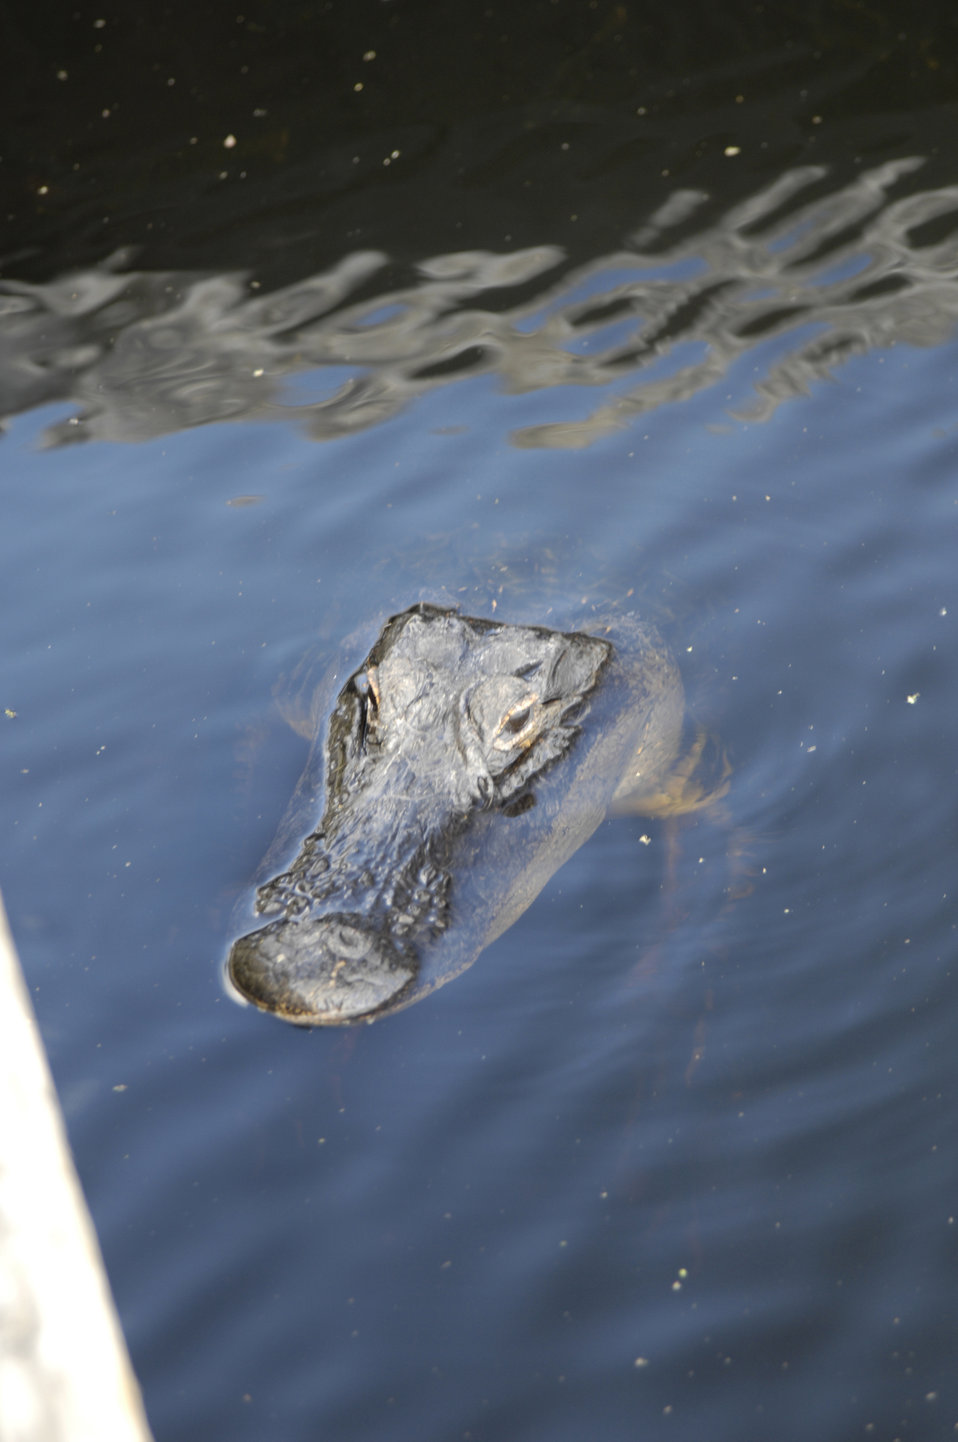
An American alligator swims in Everglades National Park, Florida on April 7, 2010. American alligators are found in the southeastern U.S. with over a million American alligators inhabiting Florida and Louisiana. Southern Florida is the only place where both alligators and crocodiles live side by side. American alligators live in freshwater environments, such as ponds, marshes, wetlands, rivers, lakes, and swamps, as well as in brackish environments. When they construct gator holes in the wetlands, they increase plant diversity and also provide habitat for other animals during drought periods. They are therefore considered an important species for maintaining ecological diversity in wetlands.